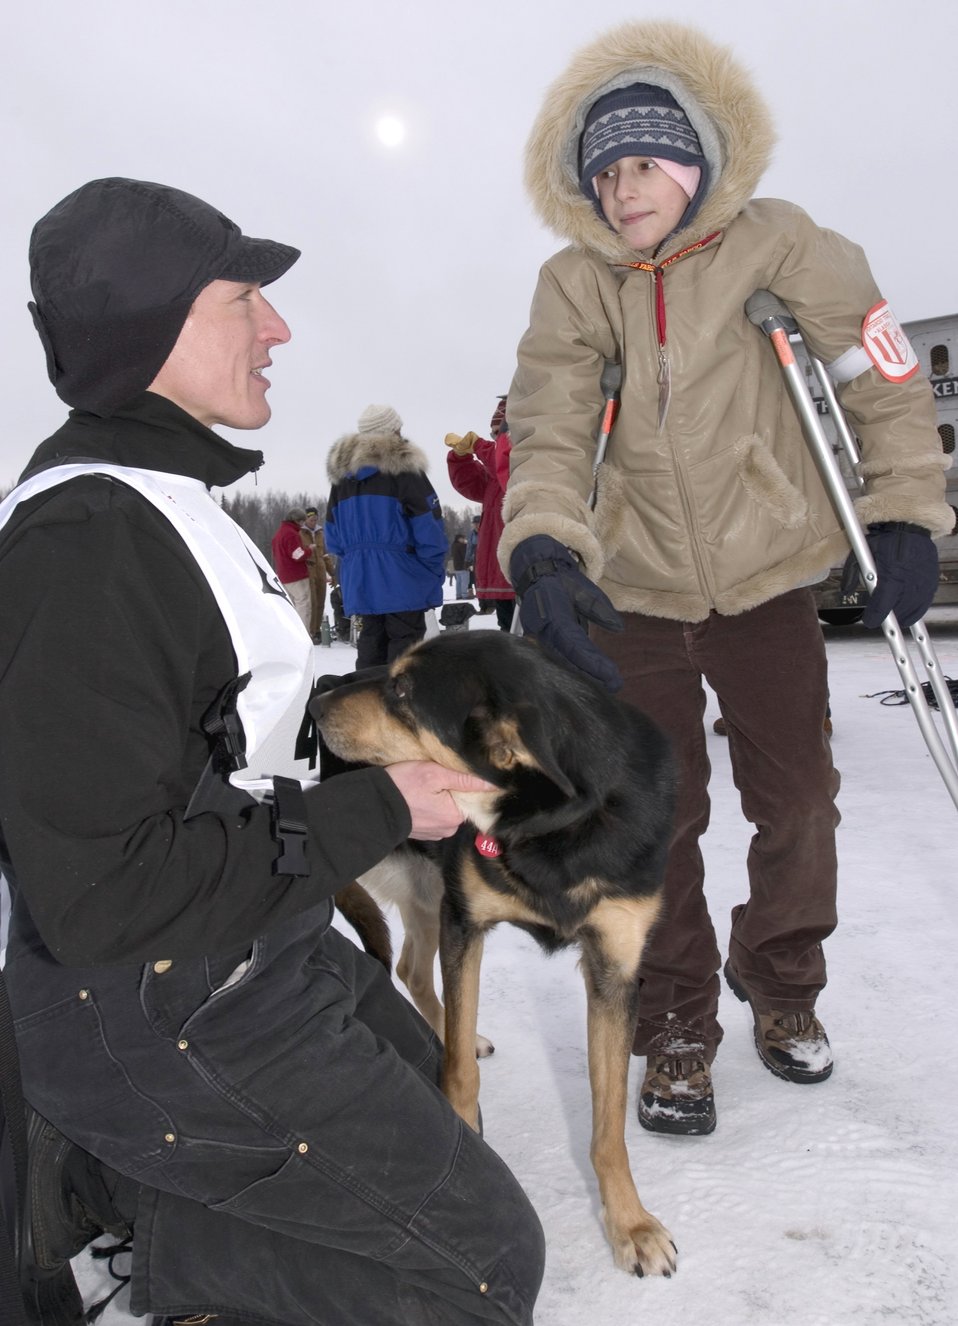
Mush!

Maj. (Dr.) Thomas Knolmayer talks with 10-year-old Katie Powell before the start of the 2006 Iditarod Sled Dog Race. Katie is the daughter of Senior Master Sgt. Chris Powell of Travis Air Force Base, Calif., and is suffering from Ewing's Sarcoma, a rare bone cancer.